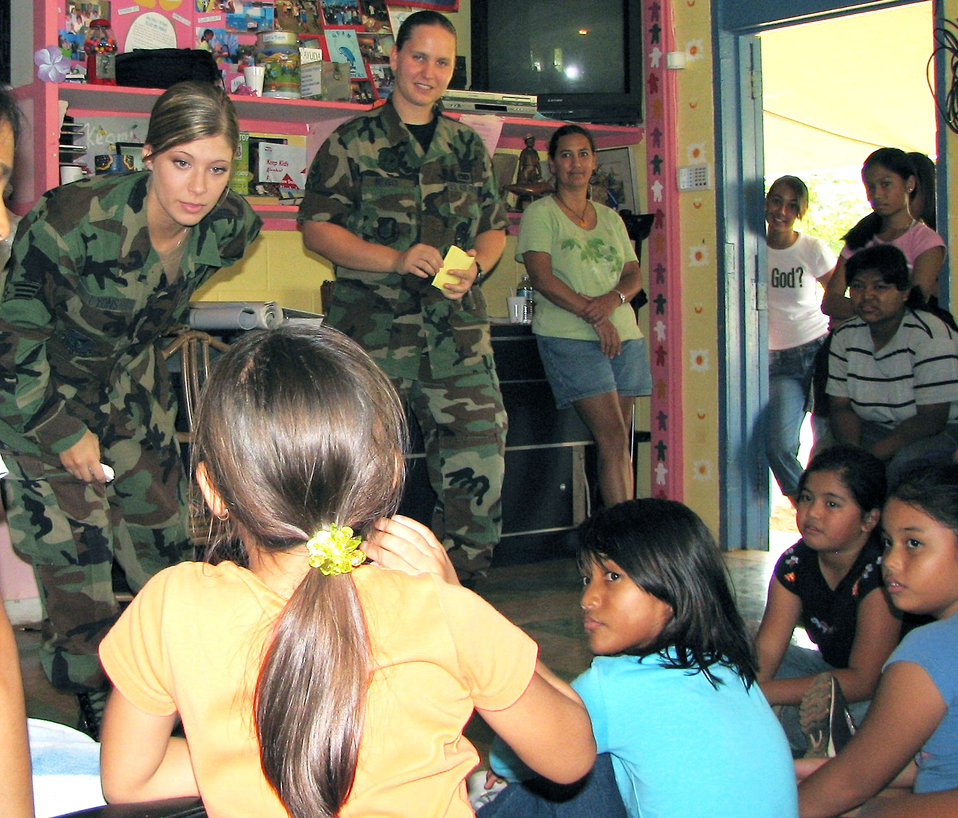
Positive role models

Senior Airman Sarah Lyons (left) and Airman 1st Class Ann Deveci listen to a question during a visit to Guam's Island Girl Power event Aug. 19 near Andersen Air Force Base. The Airmen spoke to more than 20 girls, ages 7 to 14, about the Air Force. Island Girl Power is a nonprofit organization aimed at improving girls' lives with activities and positive female role models in the community. The Airmen are assigned to the 90th Expeditionary Aircraft Maintenance Unit.